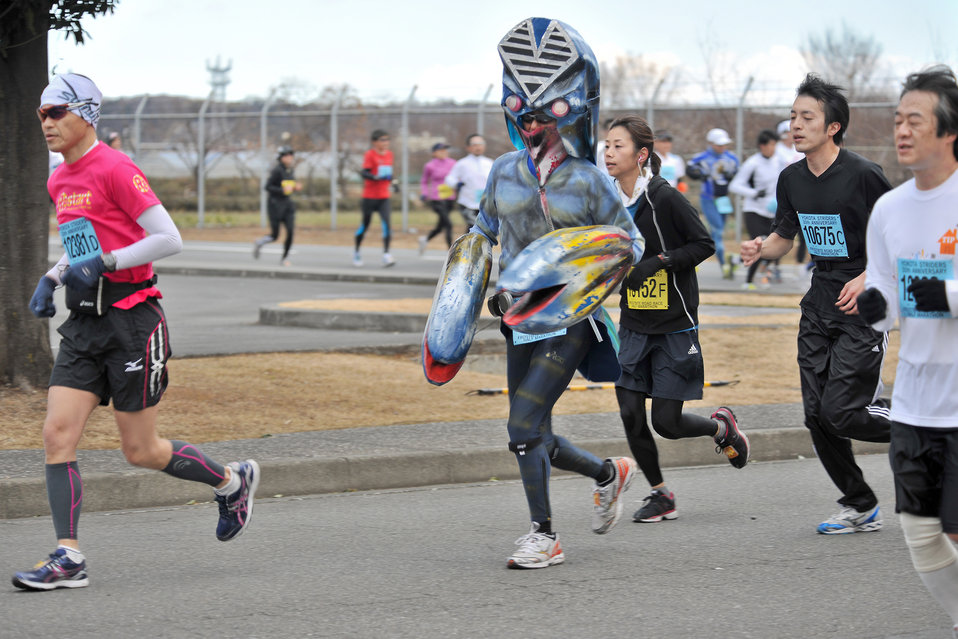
The 30th Annual Frostbite Road Race

A runner dressed as a Japanese cartoon character participates in the 30th Annual Frostbite Road Race Jan. 16, 2011, at Yokota Air Base, Japan. Some of the 6,000 runners who participated chose to wear costumes, an act that has become a yearly tradition.